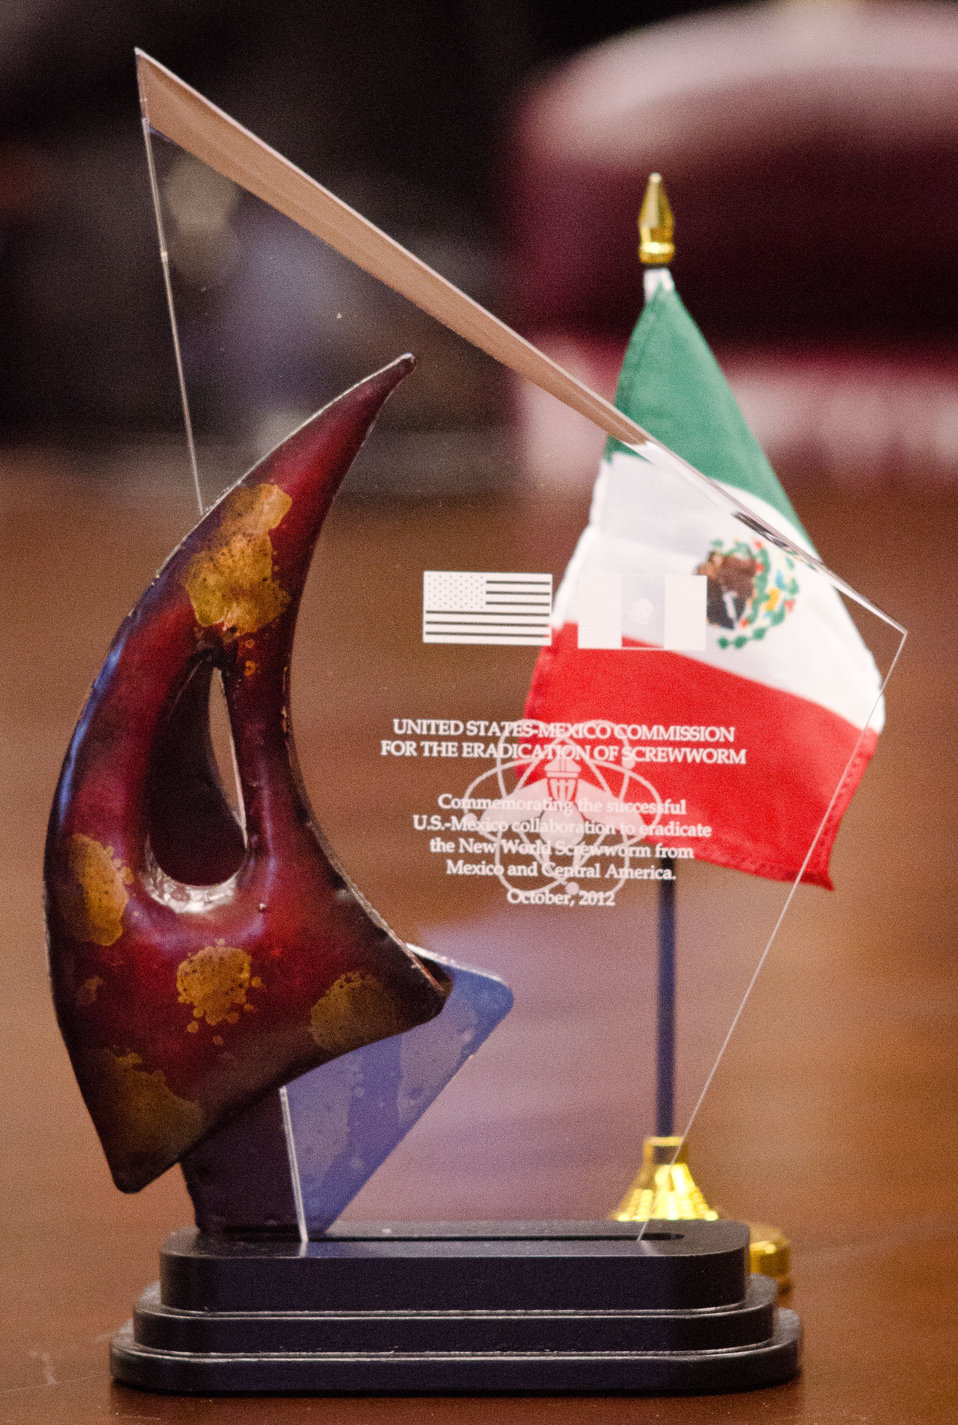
The U.S. Department of Agriculture (USDA) Animal and Plant Health Inspection Service (APHIS) International Service Action Program COMEXA Commission meeting at USDA in Washington, D.C. on Oct. 5, 2012.